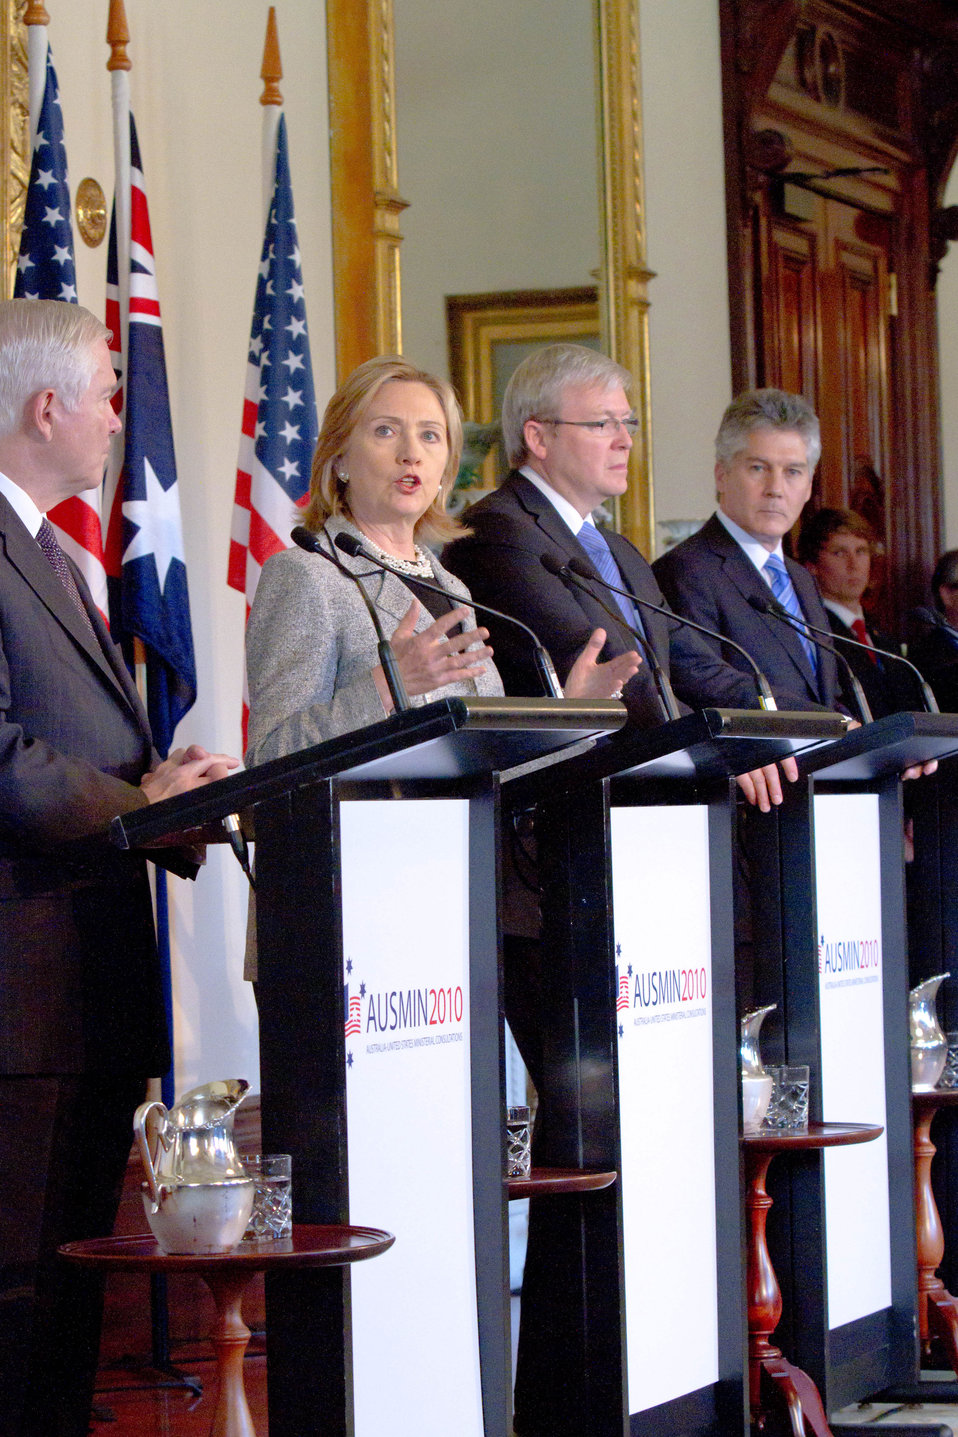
Secretary Clinton Speaks at the AUSMIN Press Conference

U.S. Secretary of State Hillary Rodham Clinton, second from left, speaks as U.S. Secretary of Defense Robert Gates, left, Australian Foreign Affairs Minister Kevin Rudd, second from right, and Australian Defense Minister Stephen Smith look on during a press conference after the annual Australia-U.S. Ministerial Consultations (AUSMIN) at the Government House in Melbourne, Australia, on November 8, 2010.